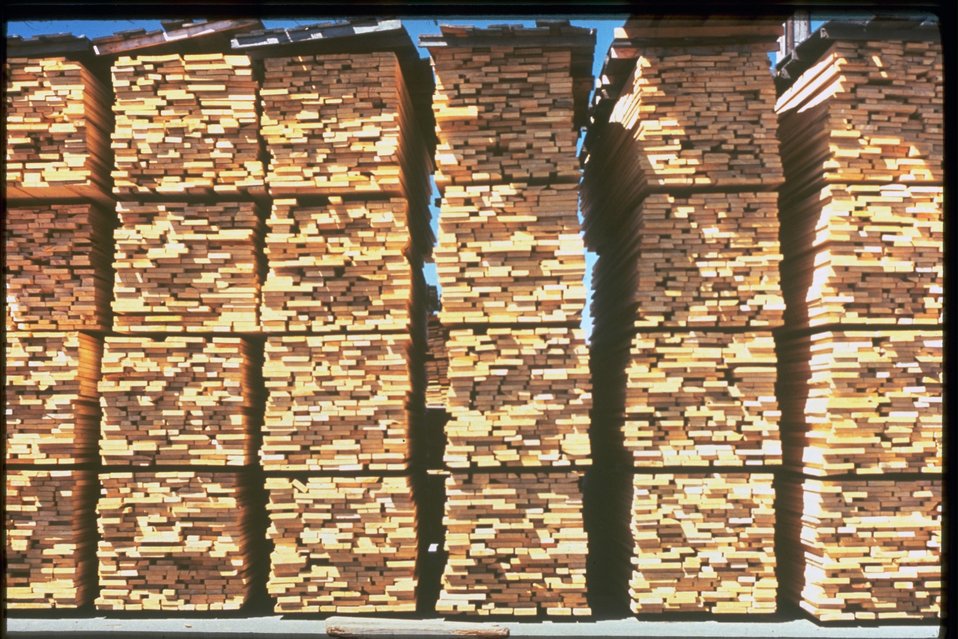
Wood drying at a lumber mill.